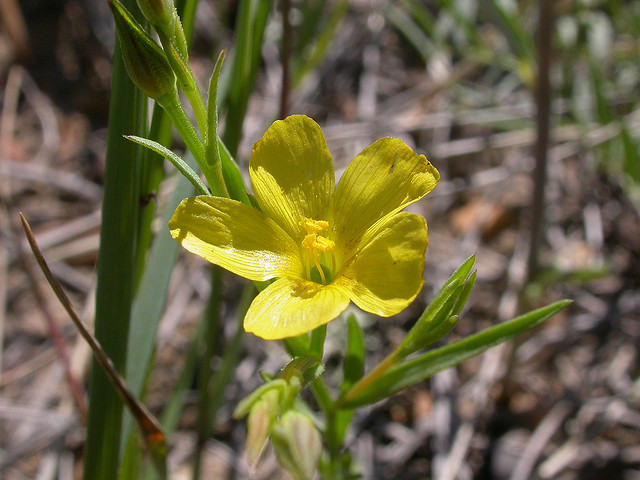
yellow flax

Charles M. Russell National Wildlife Refuge